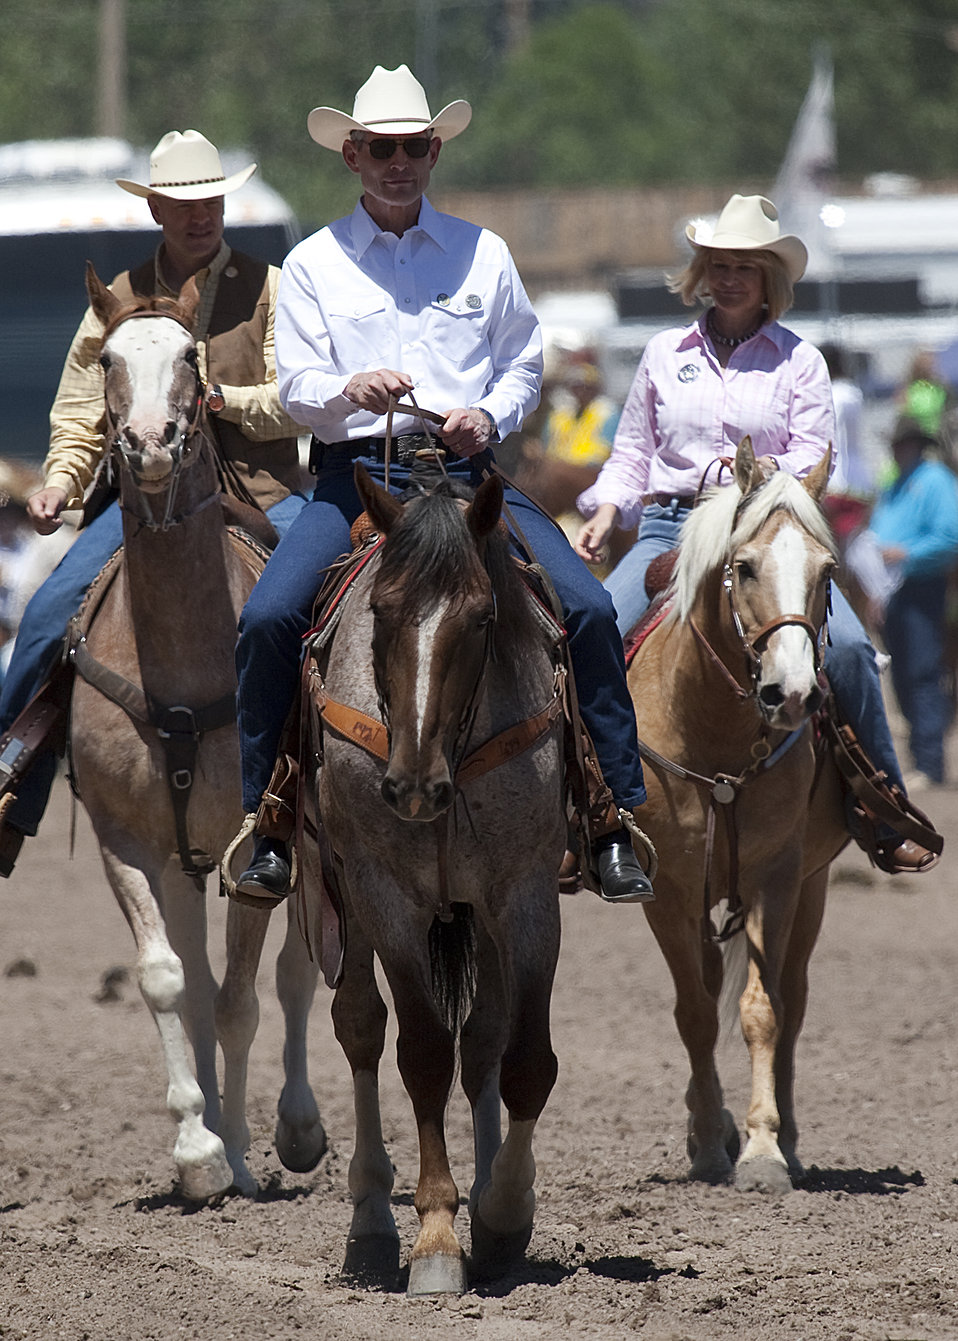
Air Force chief of staff visits Cheyenne

Air Force Chief of Staff Gen. Norton Schwartz rides with Rep. Cynthia Lummis and Wyoming Gov. Matt Mead July 23, 2011, at the 115th “Daddy of ‘Em All” rodeo grand entry at Frontier Park. Schwartz was the Cheyenne Frontier Days parade Grand Marshal.